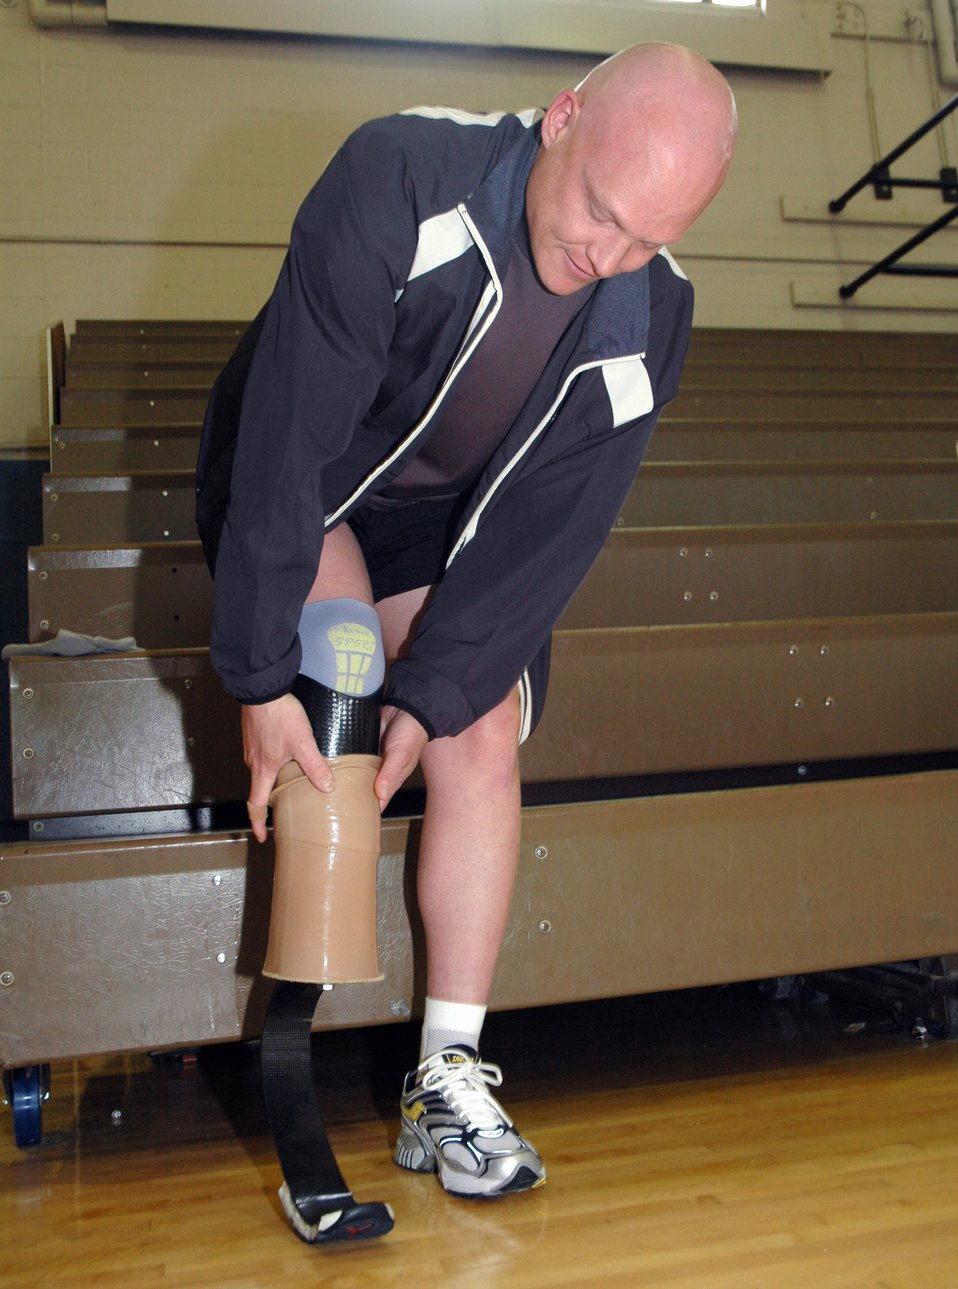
Amputee Airman overcomes cancer

Tech. Sgt. Matthew Profitt puts on a flexible prosthesis, a C-Sprint, which absorbs impact before running at Dover Air Force Base, Del. In 2003 his leg was amputated when he was diagnosed with epithelioid sarcoma, a malignant soft tissue tumor. He is a 512th Aircraft Maintenance Squadron guidance and control section technician.